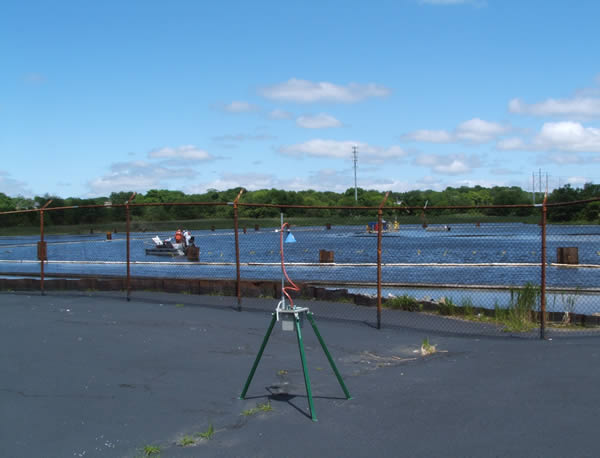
July 2009, Ambient air monitoring alongside the harbor cleanup project